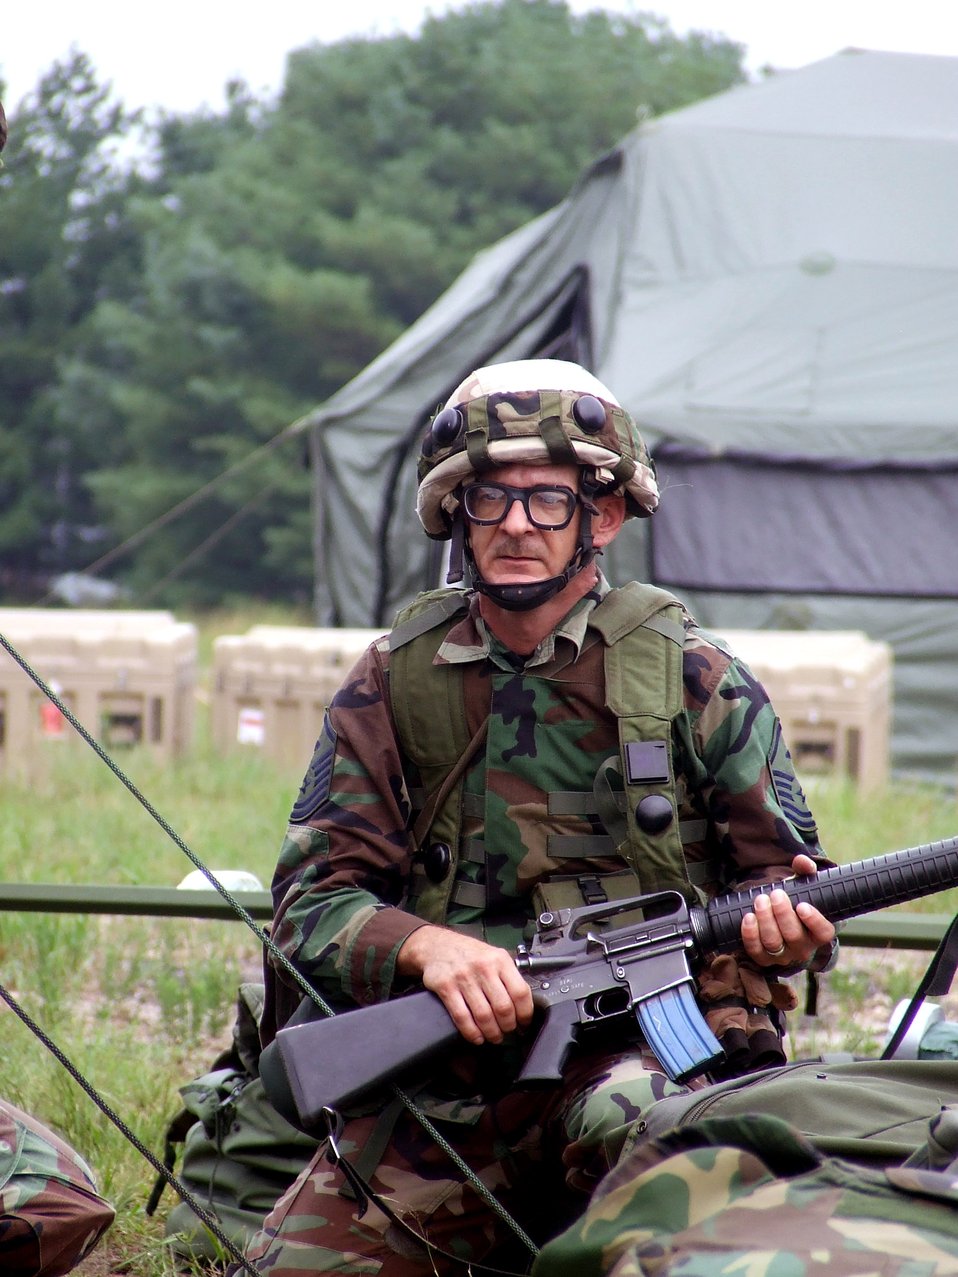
First sergeants and Eagle Flag train Airmen

Master Sgt. Frank Shoemaker responds to a scenario during Exercise Eagle Flag 07-6 Aug. 26 at Naval Air Engineering Station Lakehurst, N.J. The exercise is operated by the Air Force Expeditionary Center's 421st Combat Training Squadron at Fort Dix, N.J., and tests Airmen on expeditionary combat support skills. Sergeant Shoemaker is the first sergeant from the 7th Civil Engineer Squadron from Dyess Air Force Base, Texas.